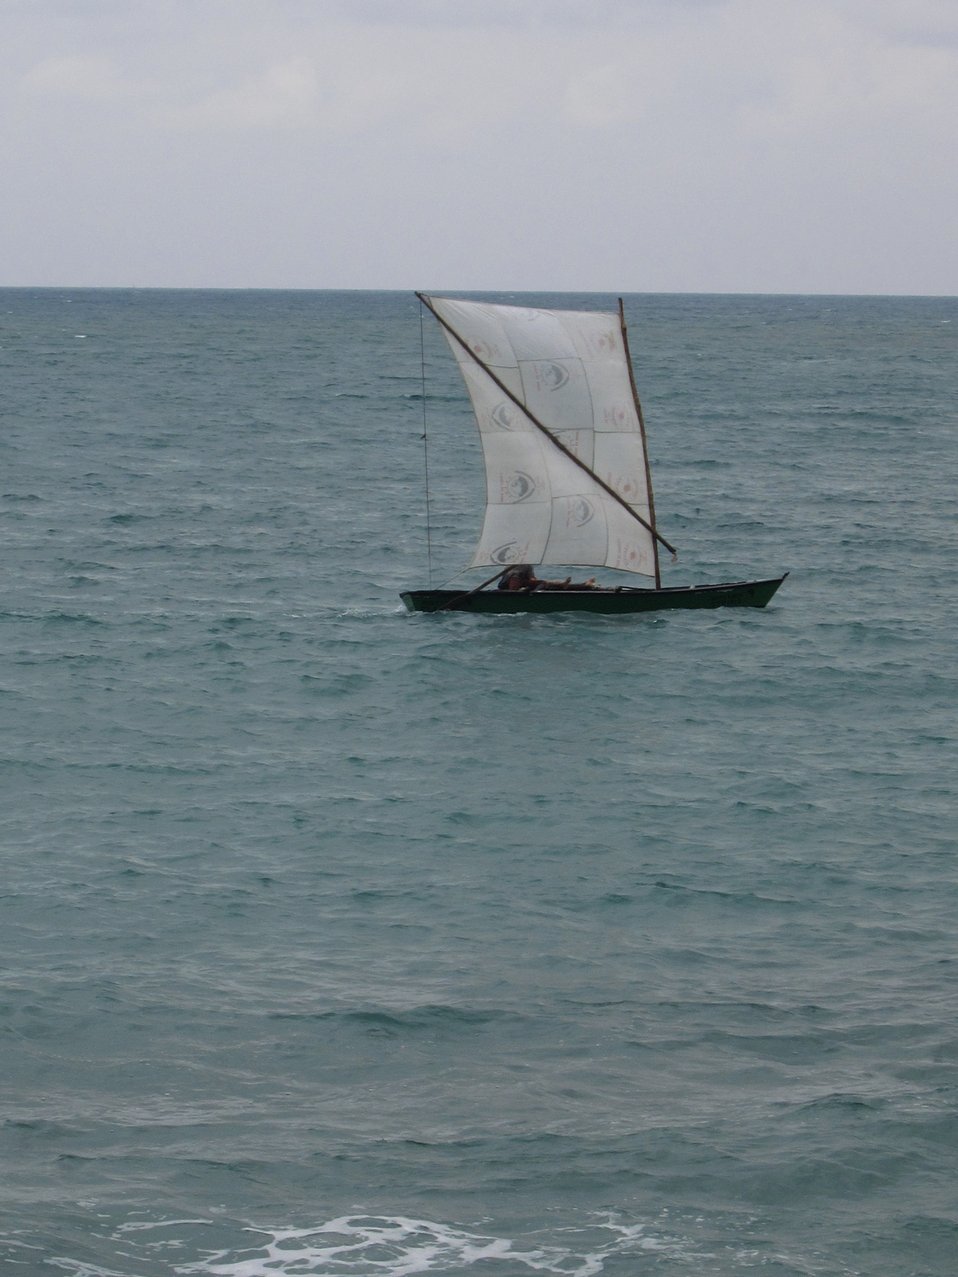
Sao Tomean artisanal fishing boat